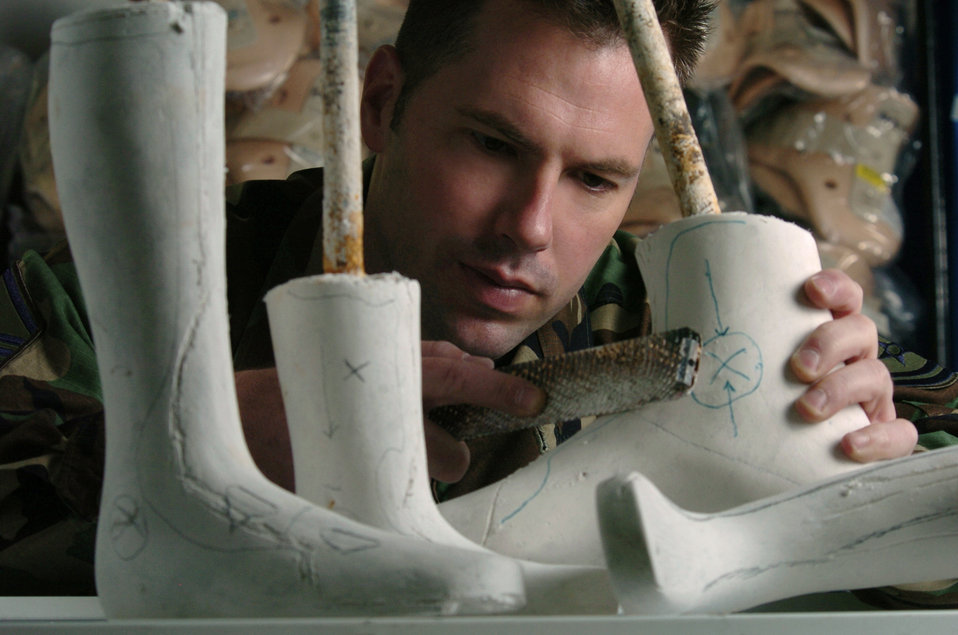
Airman helps people get back on their feet

YOKOTA AIR BASE, Japan -- Master Sgt. Nathan Simonson makes adjustments on a positive plaster mold. The orthotic lab technician makes, assembles and repairs orthopedic appliances for patients who require protective support or correction because of bone or muscle injury, disease or deformity. He is assigned to the 374th Medical Group here.